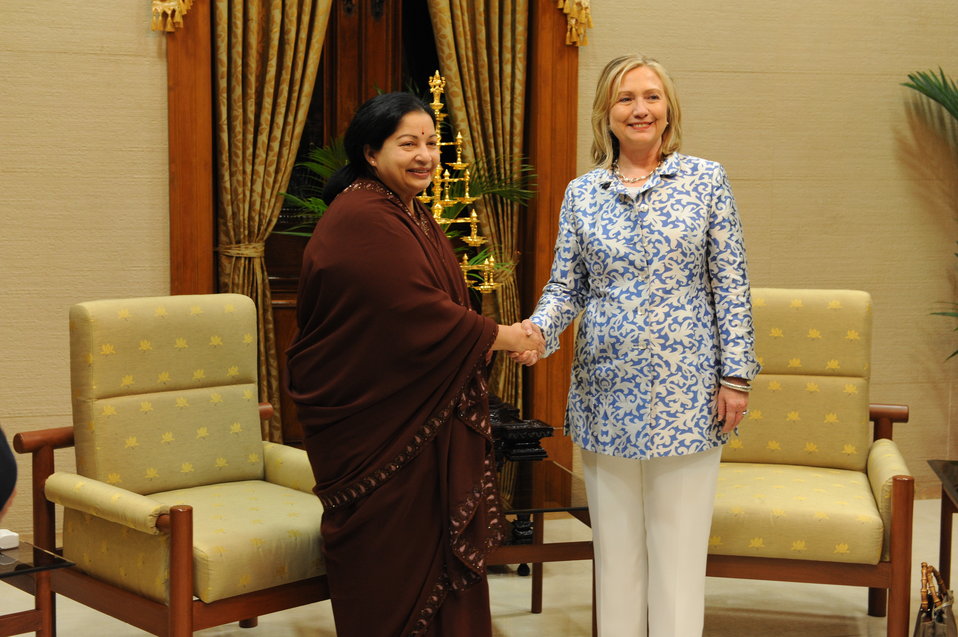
Secretary Clinton and Tamil Nadu Chief Minister Javalaithaa Shake Hands

U.S. Secretary of State Hillary Rodham Clinton and Tamil Nadu Chief Minister Jayalalithaa shake hands at the Chief Minister’s office in Chennai, India, on July 20, 2011. [Paul Cohn/ State Department photo]